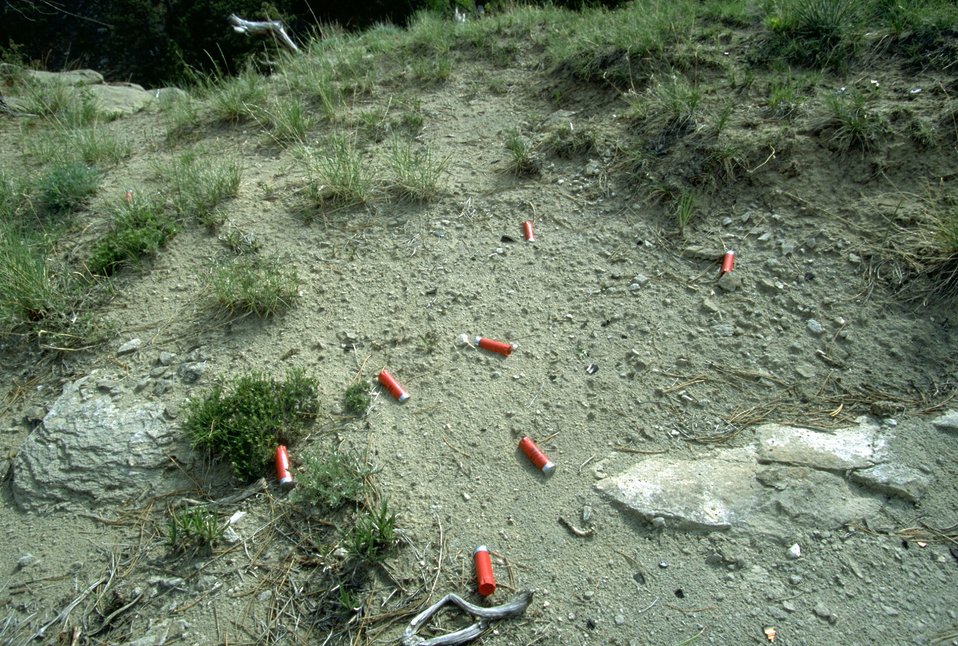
Spent shotgun shells found at a target practice area in the Acton Recreation Area